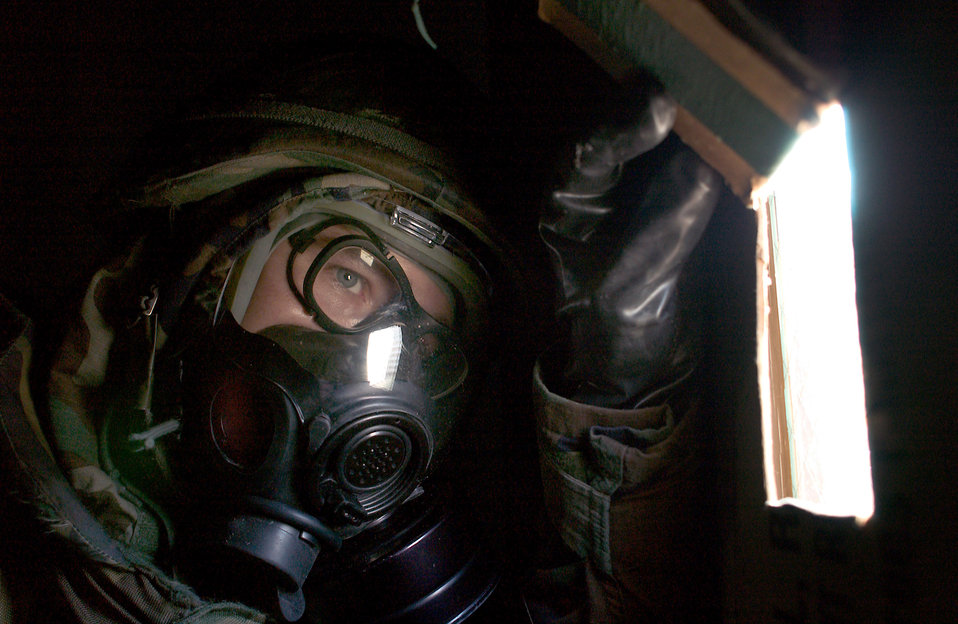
Guard duty

Tech. Sgt. Michael Cook peers through a portal while fulfilling door guard duties during an operational readiness inspection April 18 at Kunsan Air Base, South Korea. Kunsan AB participated in an operational readiness inspection to test the 8th Fighter Wing's ability to conduct its wartime mission.